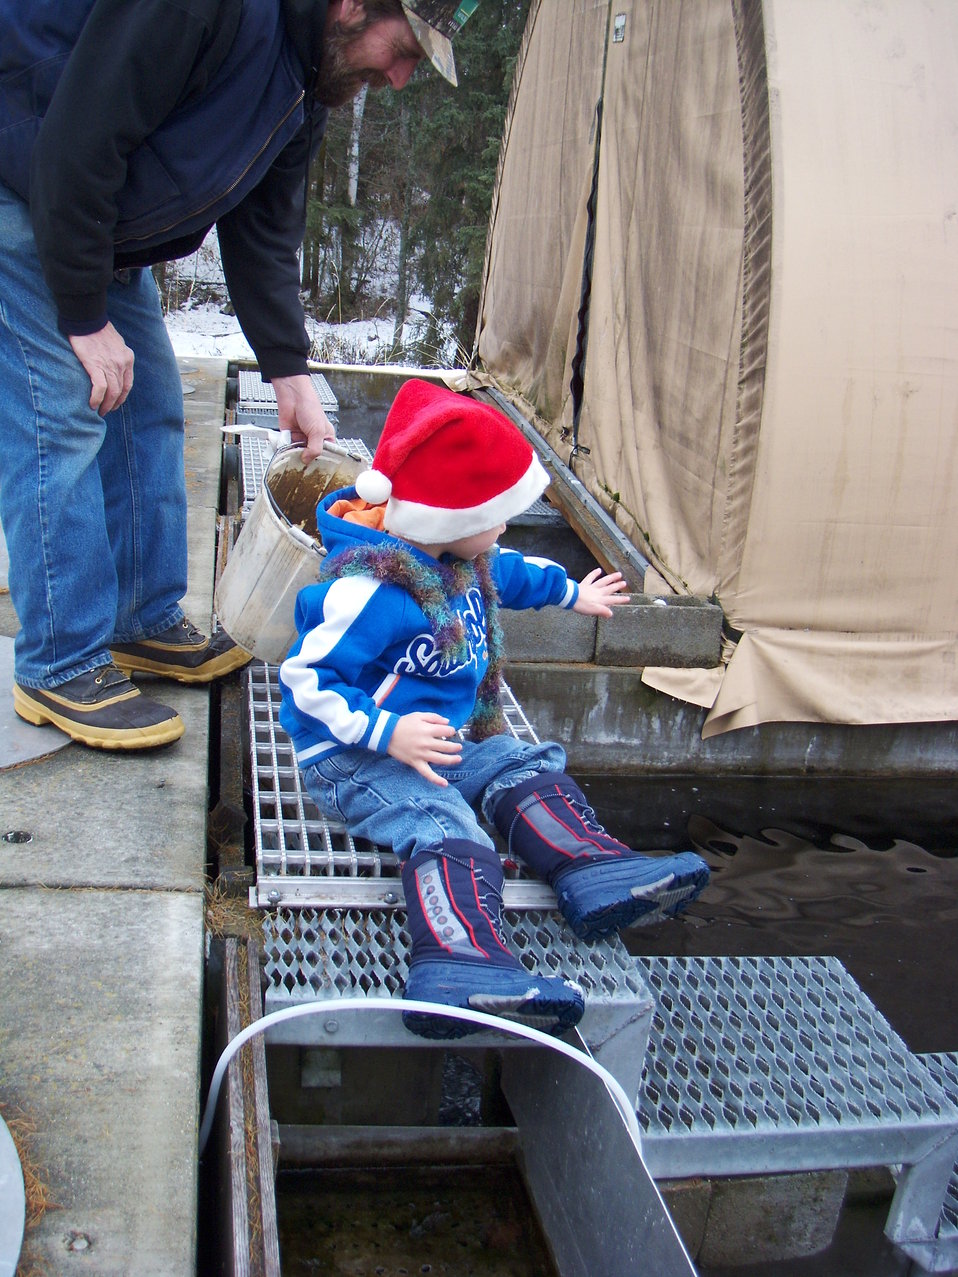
Creston National Fish Hatchery

A young child learns all about the importance of fish hatcheries and gets to have fun too!